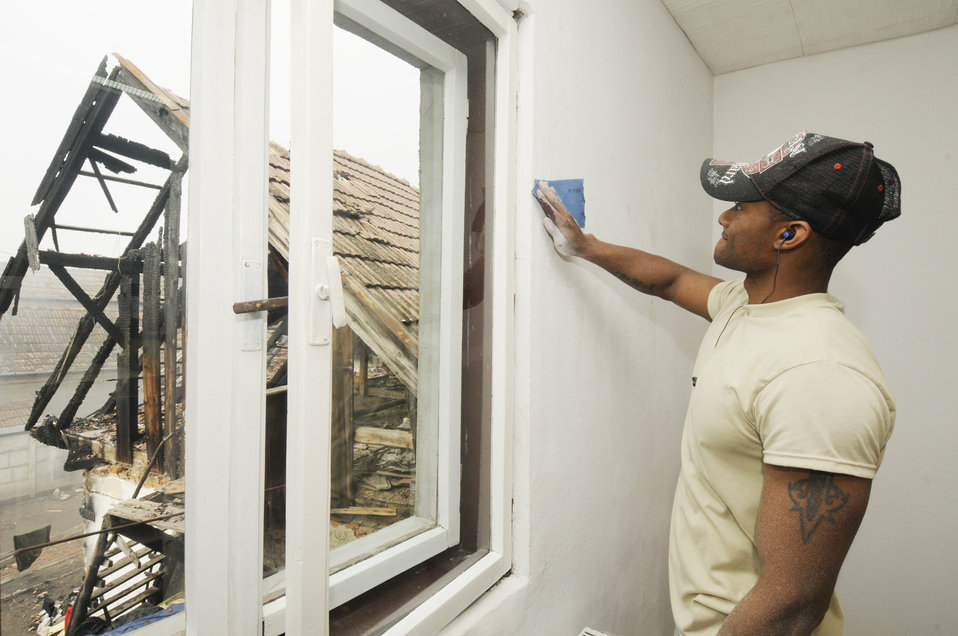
Spangdahlem Airmen reach out to Romanian community

Staff Sgt. Travis Jordan prepares the wall of a children's community center for repainting while deployed in support of Operation Dacian Thunder 2009 Oct. 26, 2009, in Turda, Romania. Members of Spangdahlem Air Base, Germany, donated money and time to help refurbish the center during their deployment. The center provides academic help to about 50 local children after school to ensure they graduate. Sergeant Jordan is assigned to the 52nd Security Forces Squadron.